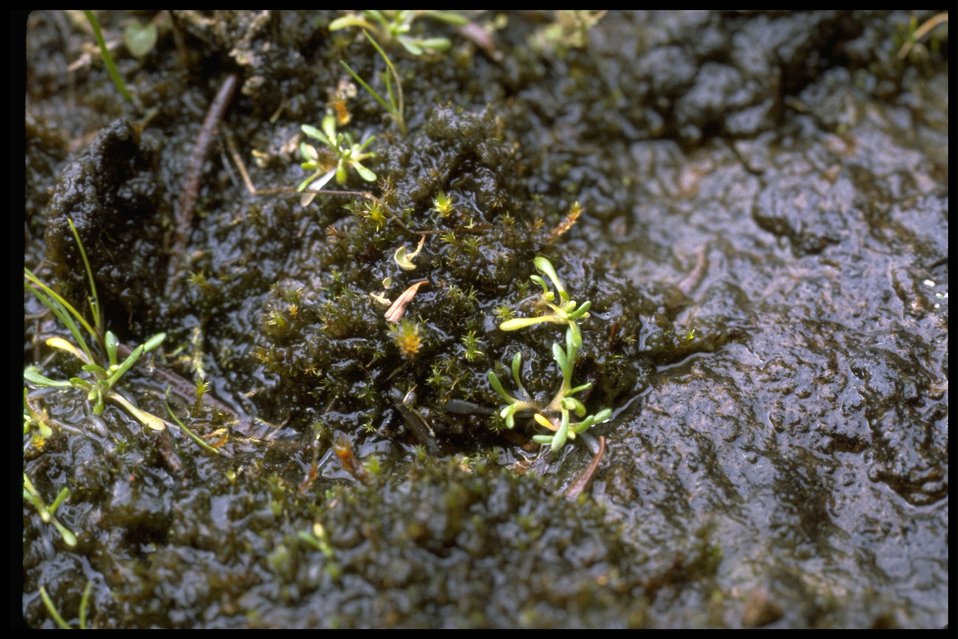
Montia howellii, or commonly known as Howell's Montia.